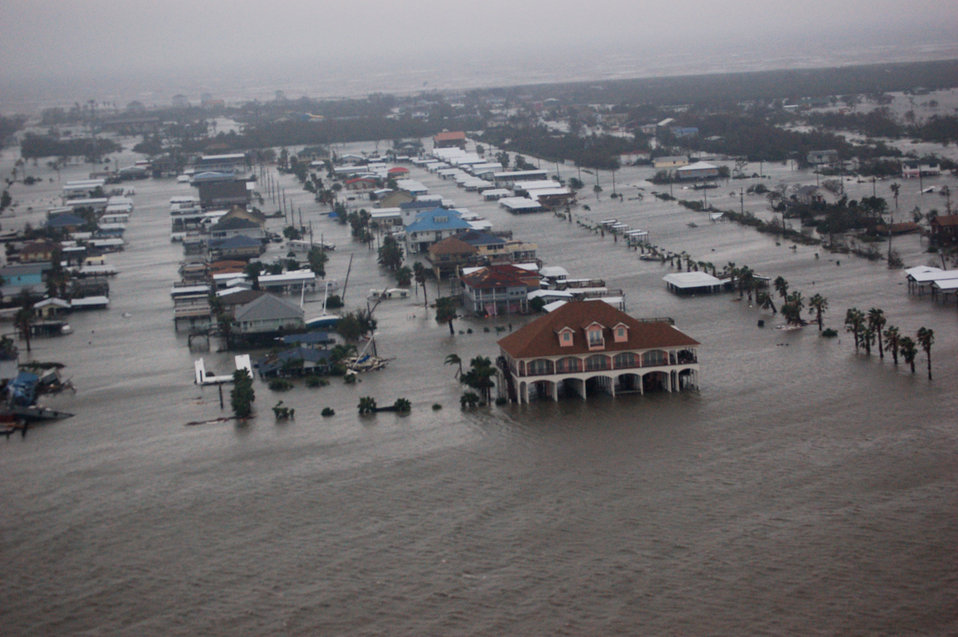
Airmen survey Ike damage

Airmen aboard an HH-60G Pave Hawk survey the damage caused by Hurricane Ike Sept. 13 around Galveston, Texas. Airmen from across the Air Force are deployed to the 331st Air Expeditionary Group at Randolph Air Force Base, Texas, to assist with rescue missions. Three HH-60Gs and two HC-130 Hercules aircraft from the 331st AEG flew over the devastated area to assist with relief operations.